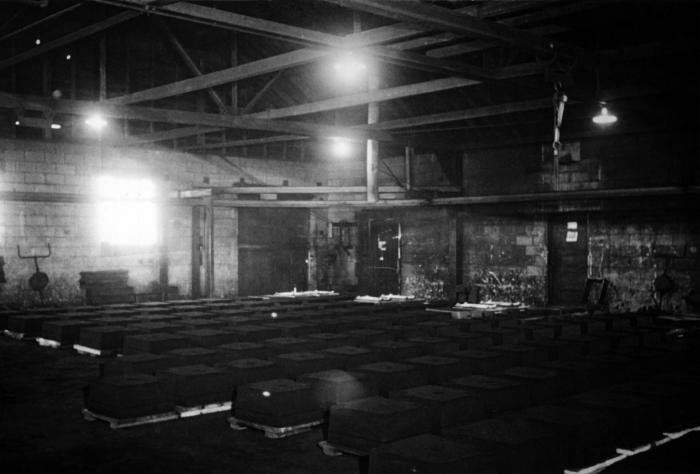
This historical photograph was provided by the Center for Disease Control's (CDC), National Institute for Occupational Safety and Health (NIOSH). The image depicted the inside of a Milan, Michigan foundry before it was cleaned and painted. The interior was dimly lit, soot covered the floor, and metal product was stacked on wooden palettes. Compare this photo with PHIL # 9499 revealing the appearance of the foundry's interior after it had been rennovated. In industrial settings such as this, plant workers can be exposed to potential respiratory health hazards, especially when working in a chemical industry setting.